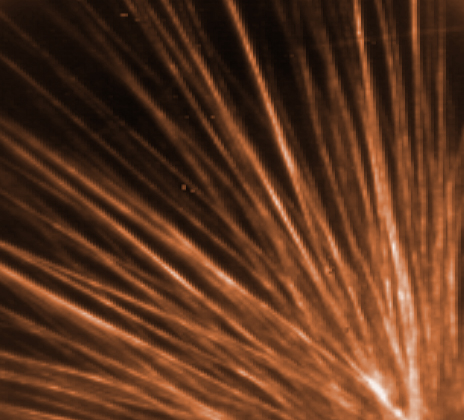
Self-assembly using bile acids

Single wall carbon nanotubes enclosed in bile acid shells self assembled into a sheaf of long ordered fibrils each composed of several nanotube rods. Treating the microscope slide with a hydrophobic compound causes the fibrils to cluster like this at specific sites, probably at defects in the hydrophobic surface. Image, 70 micrometers wide, was taken using near-infrared fluorescent microscopy. (Color added for clarity.)